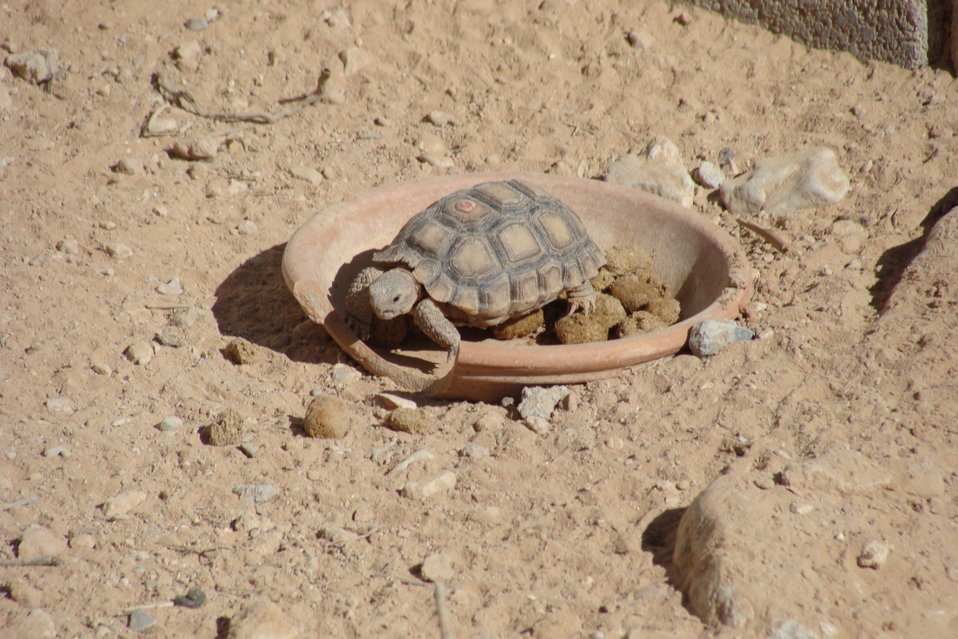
Young Mojave Desert Tortoise

The U. S. Fish and Wildlife Service has announced the availability of a Revised Recovery Plan for the threatened Mojave population of the desert tortoise (Gopherus agassizii) under the Endangered Species Act (ESA). The Plan takes a new approach to reversing declines in Mojave desert tortoise populations through a coordinated effort of science-based implementation and evaluation of conservation actions.

Unlike the previous Recovery Plan, which focused on mitigation measures, this Plan recognizes the need to adjust to the accelerating pace of environmental change and its impact on key resource management issues, such as corridors and connectivity. The Plan will be a living document that advances a natural resource management model where ongoing detection of changes and attribution of causes will provide the basic information on whether or not the desert tortoise or its ecosystem is changing beyond natural variability.

By continuous examination of vulnerability, exposure, sensitivity, and adaptive capacity of the desert tortoise to environmental change, resource managers will be able to update the Plan as it is being implemented with conservation measures that will help the desert tortoise recover.